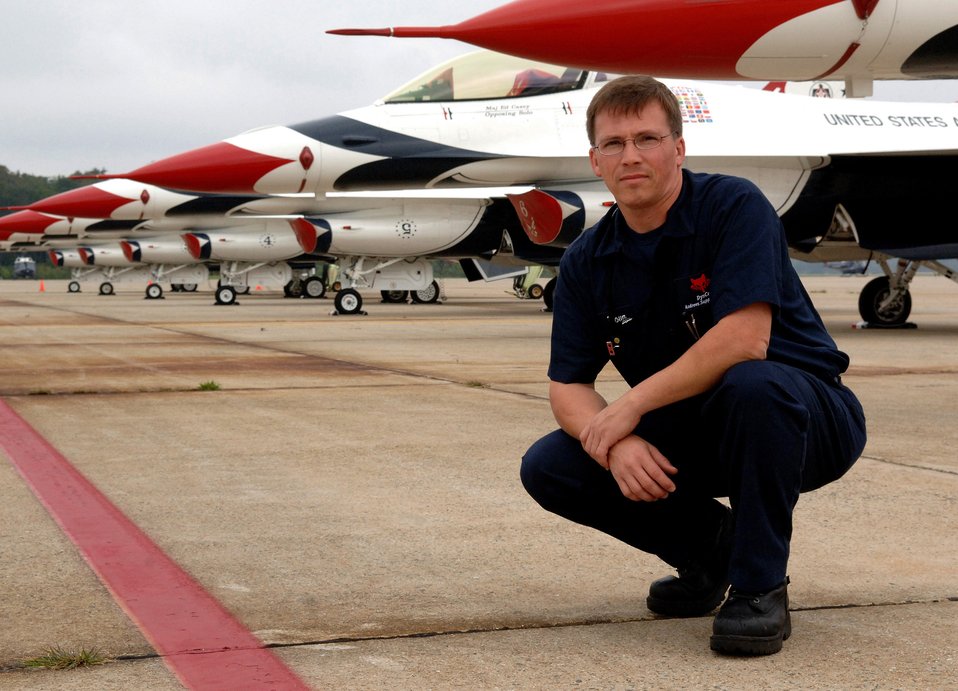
AF Memorial: Former Airman contributes to dedication

Douglas Landgraf crouches in front of the U.S. Air Force Thunderbirds aircraft Oct. 11 at Andrews Air Force Base, Md. Mr. Landgraf is an aircraft mechanic and ramp coordinator with the 89th Airlift Wing at Andrews AFB and is involved with the Air Force Memorial dedication ceremony Oct. 14 in Arlington, Va.